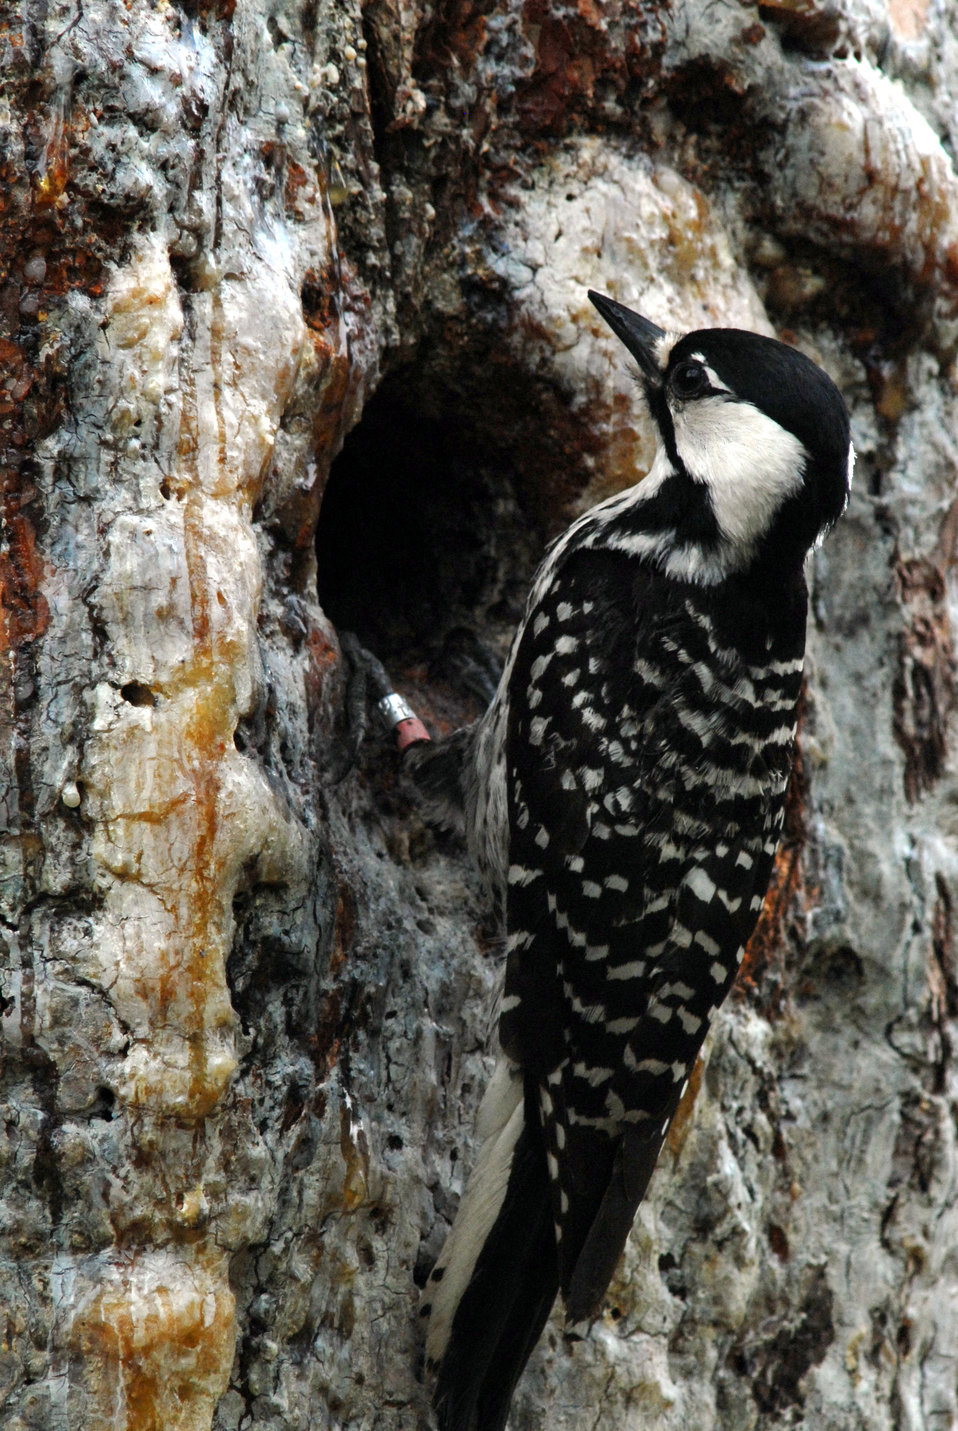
Red-cockaded woodpecker feeding young

This endangered red-cockaded woodpecker is feeding young at the nest, in a cavity of a longleaf pine in Georgia. Active management and restoration of longleaf forests can help recover this species.